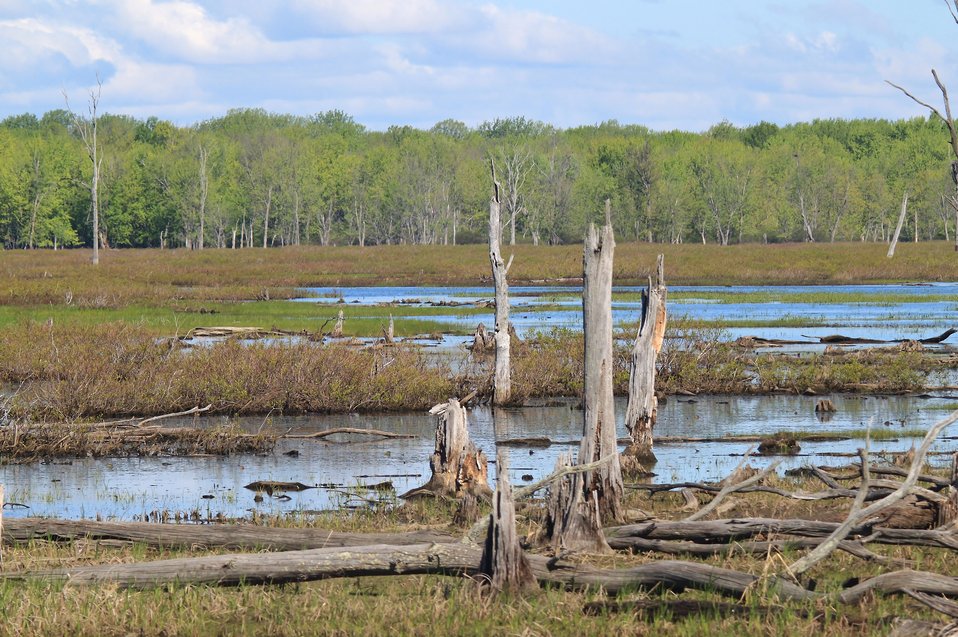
Cranberry pool

Missisquoi National Wildlife Refuge wetlands.